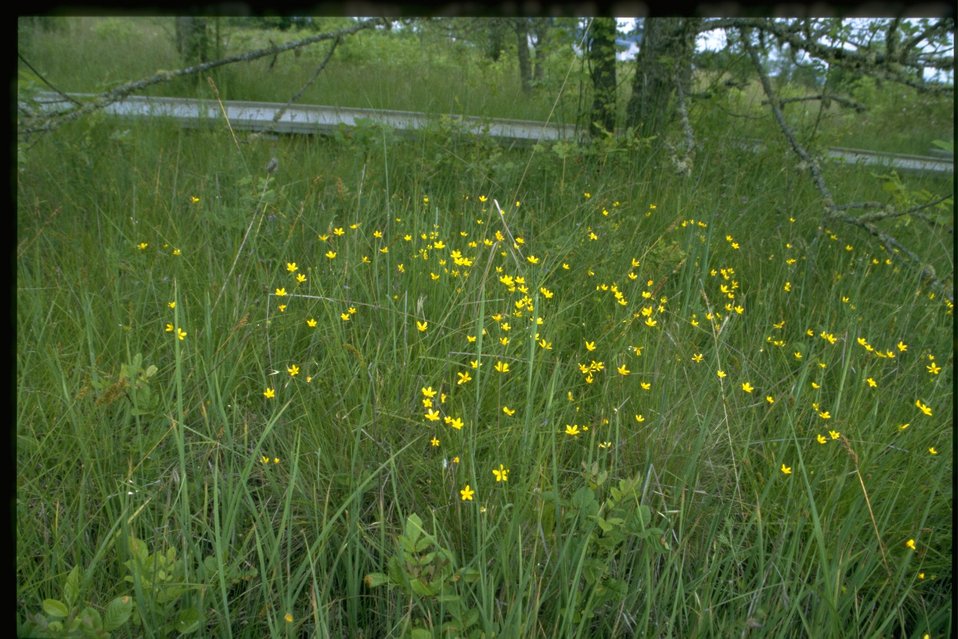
Farshot of Ranunculus occidentalis.